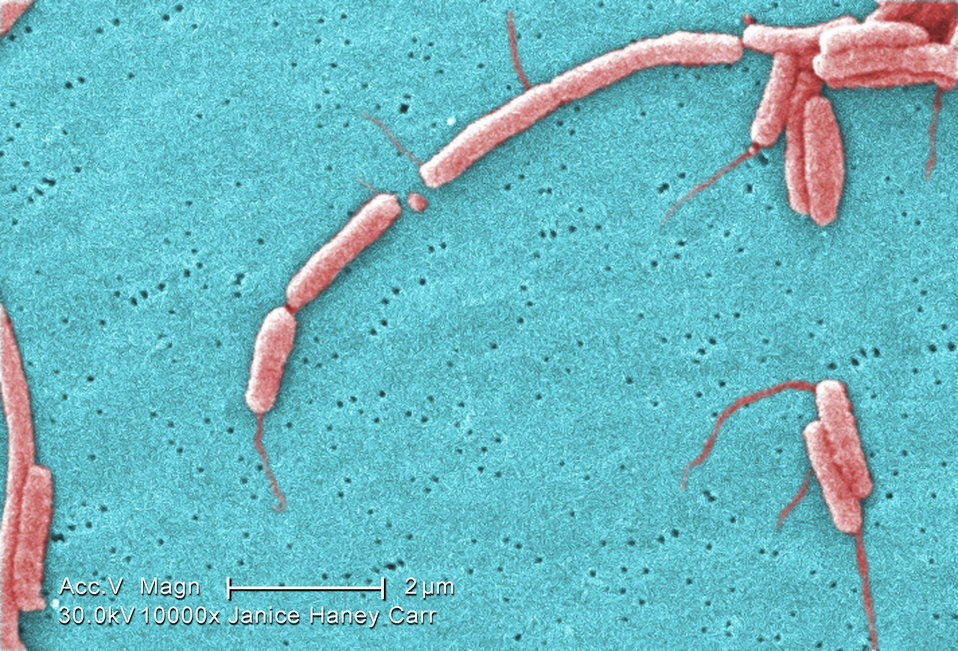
Under a high magnification of 10000X, this colorized scanning electron micrograph (SEM) depicted a number of Gram-negative Legionella pneumophila bacteria. Please see PHIL 11092 through 11152 for additional SEMs of these organisms, specifically PHIL 11129 for a black and white version of this image. Of particular importance, is the presence of polar flagella, and pili, or long streamers, which due to their fragile nature, in some of these views seem to be dissociated from any of the bacteria.